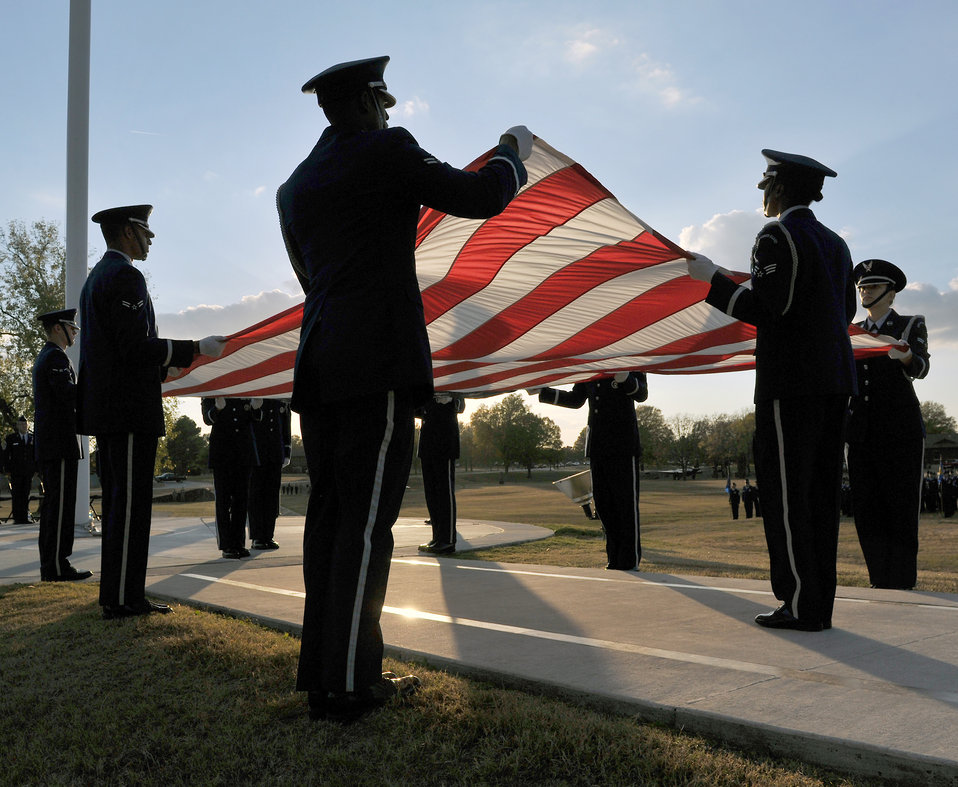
Veterans Day retreat ceremony

Honor guard members at Little Rock Air Force Base, Ark., fold Old Glory at the Veterans Day retreat ceremony Nov. 10, 2010.